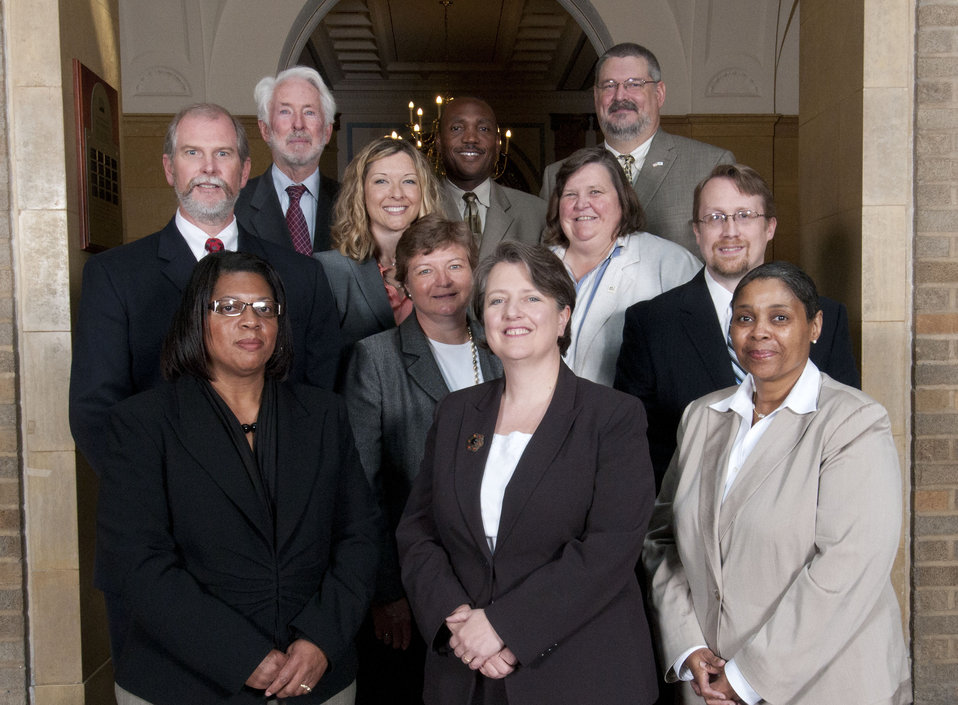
OHSEC Deepwater Horizon Response Team, Departmental Management, Washington, DC. Todd Repass, Group leader. Fr leadership in coordinating USDA support to the national response to the Deepwater Horizon oil spills.
On September 14, 2011 in the patio of the Whitten Building Patio of the US Department of Agriculture in Washington, DC.